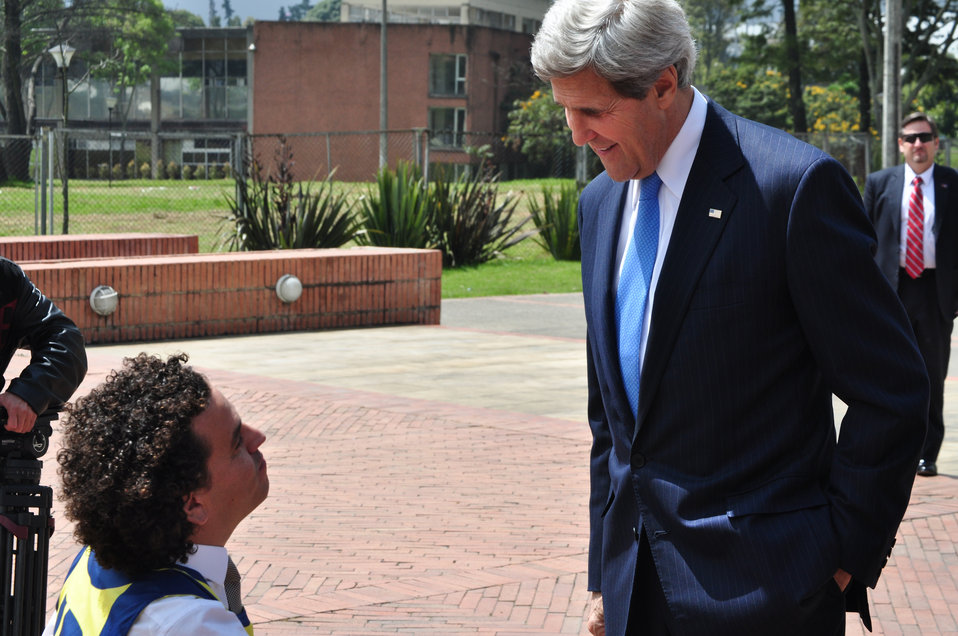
Secretary Kerry Meets With Arcangeles Director Juan Pablo Salazar

U.S. Secretary of State John Kerry meets with Juan Pablo Salazar, Director of Arcangeles which empowers wounded warriors through sports, during a visit to the Coldeportes Center in Bogota, Colombia, on August 12, 2013.